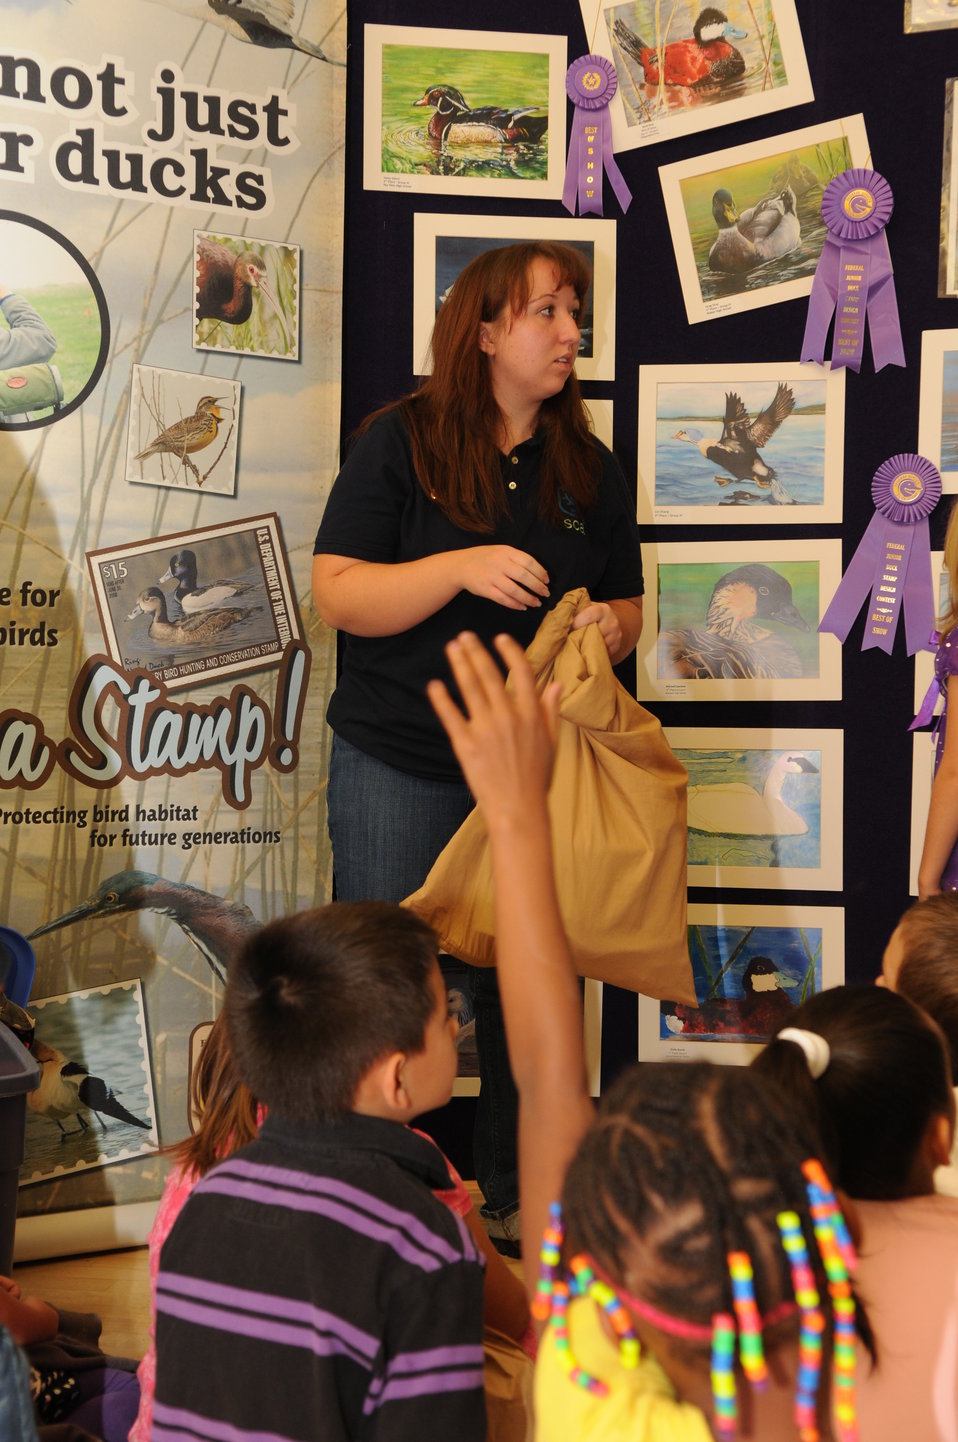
Youth Outreach

The U.S. Fish & Wildlife Service sponsored the 2012 Federal Duck Stamp Art Contest September 28 and 29 in Ogden, Utah, at Weber State University. A panel of five judges was responsible for choosing the art work used to design the 2013-2014 Migratory Bird Hunting and Conservation Stamp.